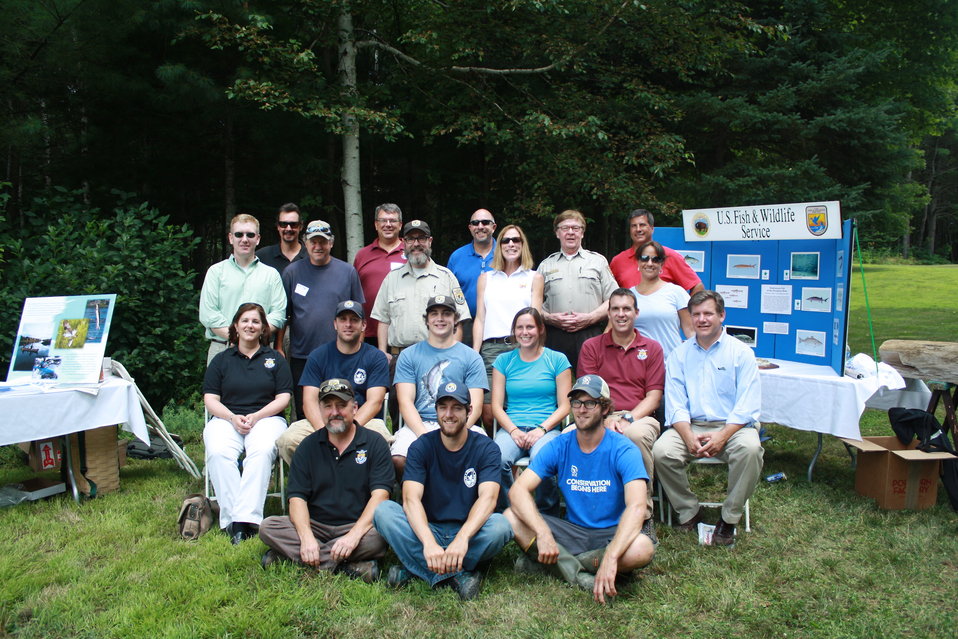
Veazie Dam Removal

A group shot of U.S. Fish and Wildlife Service staff at the press conference.